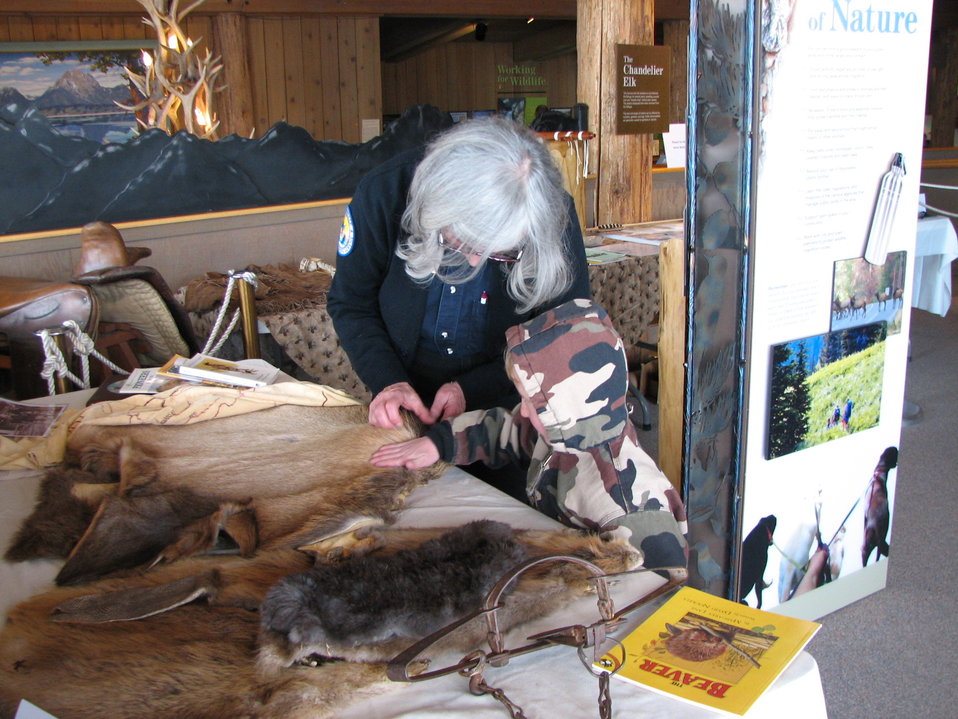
A Tactile History Lesson

National Elk Refuge volunteer Claudia Rector walks a young visitor through tables full of pictures, relics, books, and maps related to Jackson Hole history at a Refuge centennial event on February 20, 2012 held in the Jackson Hole & Greater Yellowstone Visitor Center.